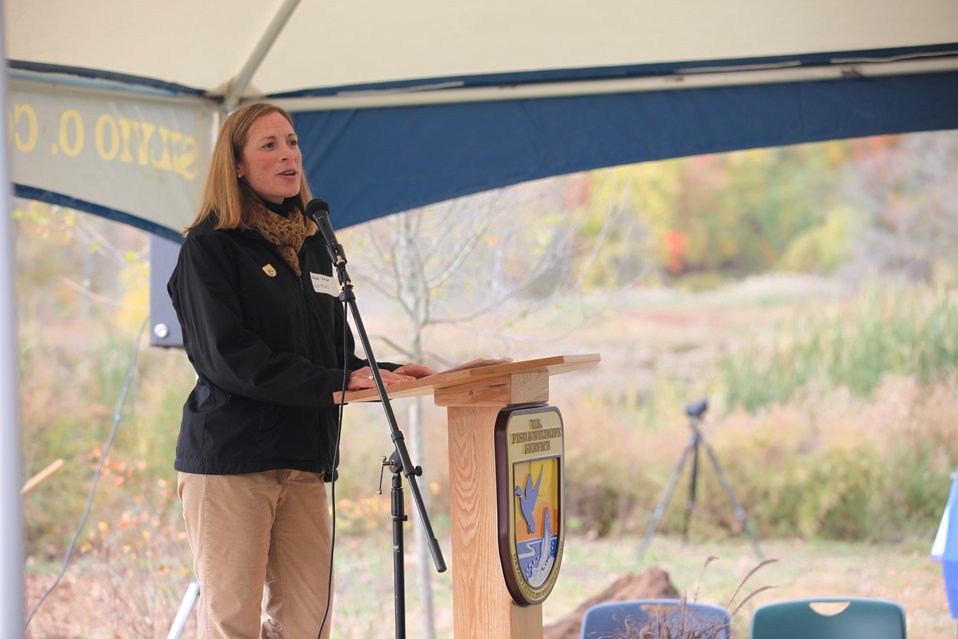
U.S. Fish and Wildlife Service Northeast Regional Director Wendi Weber addresses partners, school students, and local neighborhood groups at the New Haven Harbor Watershed Urban Wildlife Refuge Partnership designation.